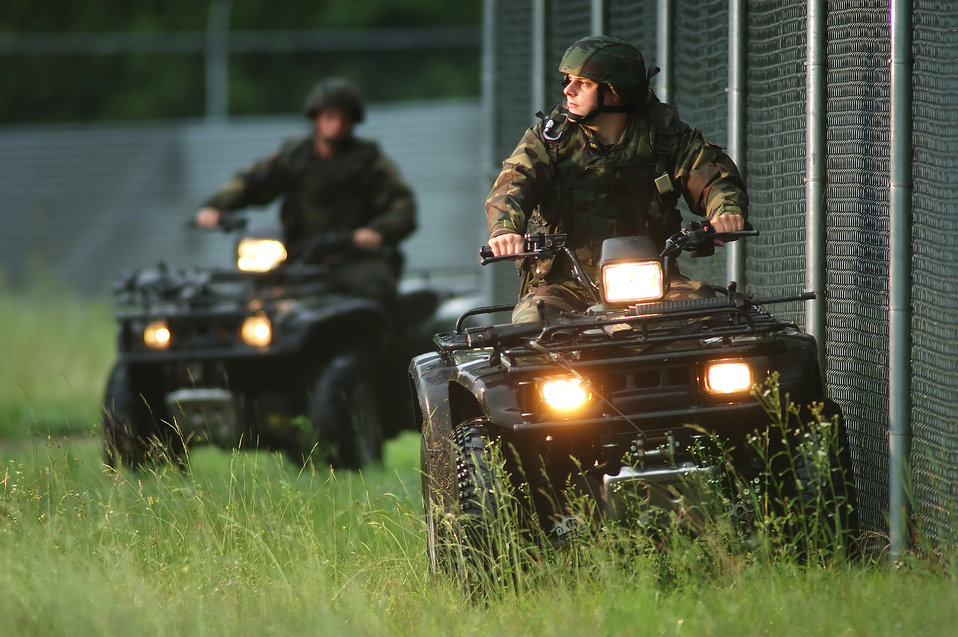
Free wheeling

BURLINGTON, Vt. -- Staff Sgts. Dennis Mercier, front, and Brian Eggleston patrol the airfield perimeter here June 27. They are secuirty forces Airmen with the Vermont Air National Guard's 158th Security Forces Squadron.